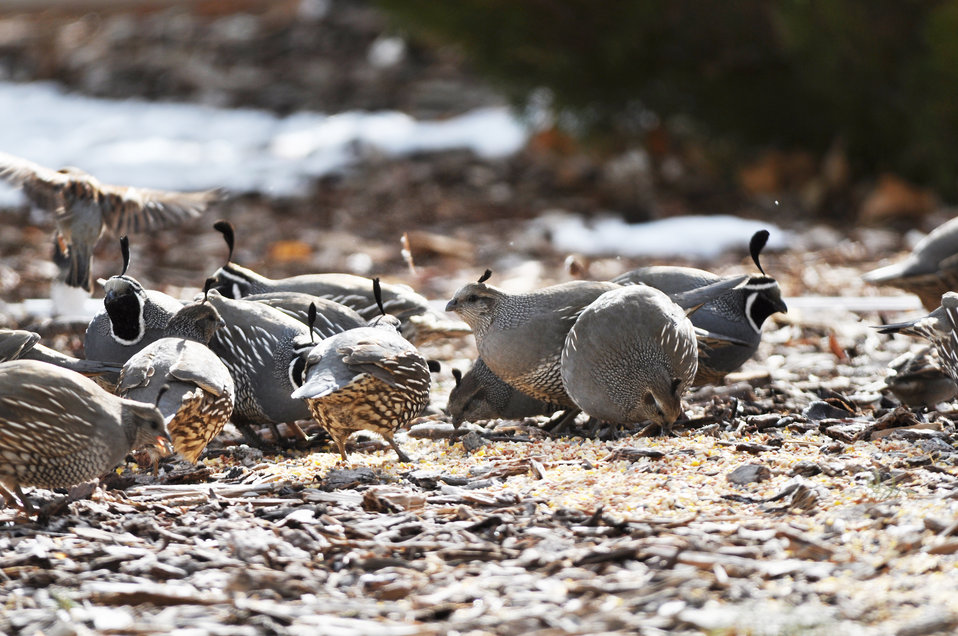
California quail photos taken in Gardnerville, NV